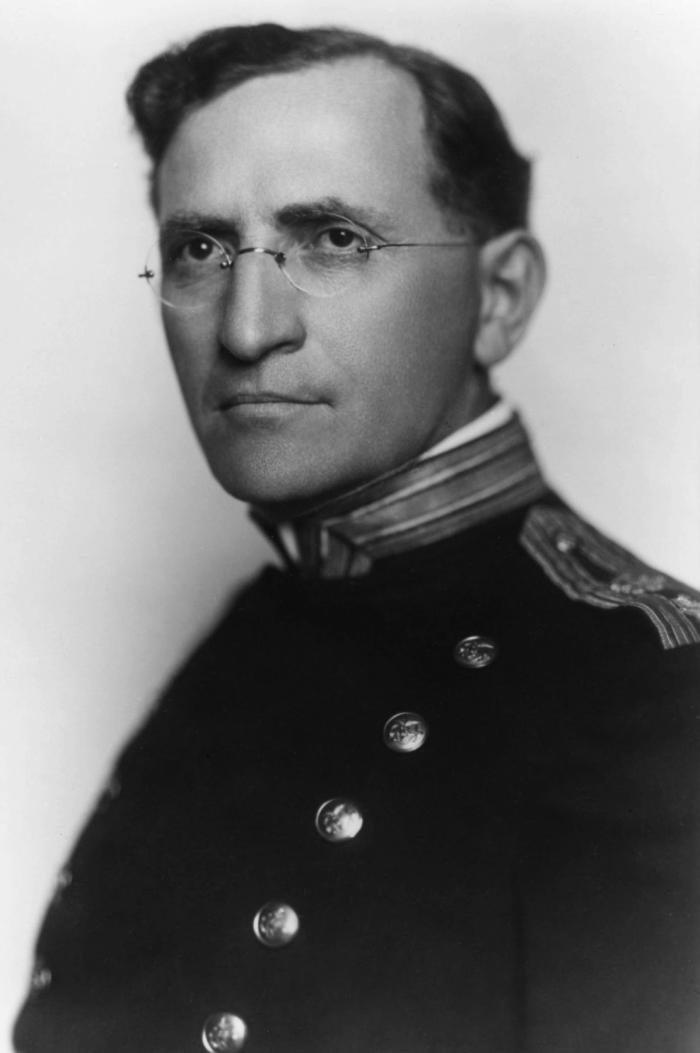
This photographic portrait shows epidemiologist and member of the U.S. Public Health Service, Dr. Joseph Goldberger (1874 - 1929).